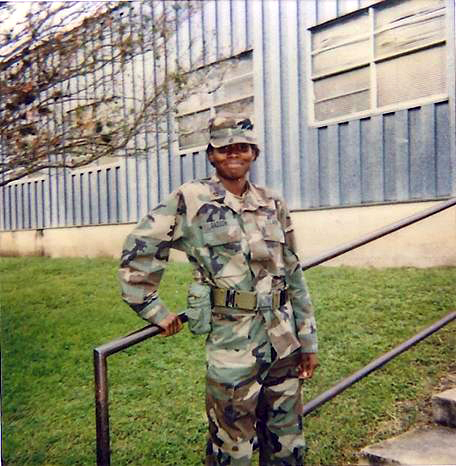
Lachelle Gadson, a Human Resources Specialist, served in the Army as a Combat Medic from 2000 to 2004. She attained the rank of Specialist E-4.